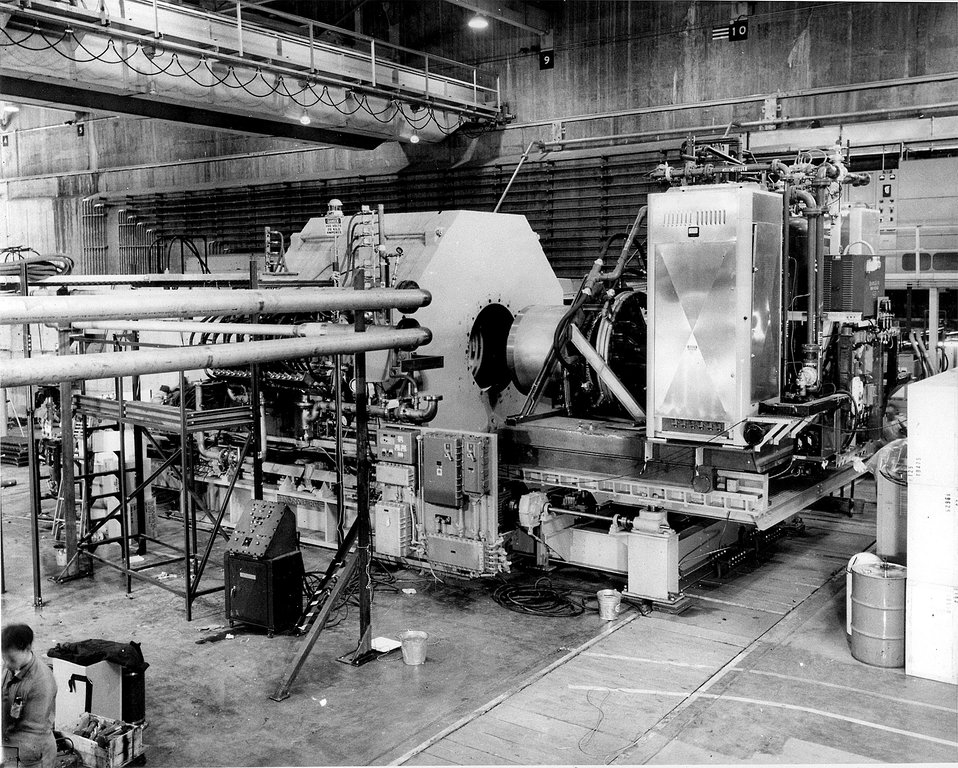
The 40-inch Michigan-Argonne heavy liquid bubble chamber showing the 46 kilogauss magnet (octagonal structure) in the center.
c.1968